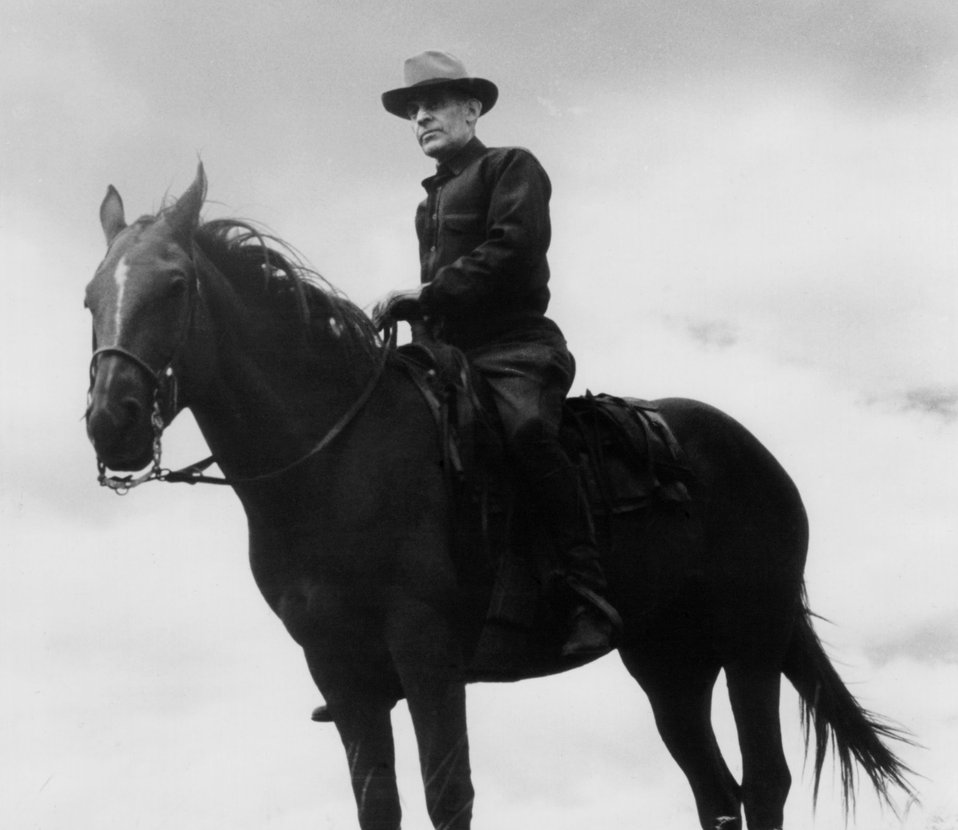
elers10

Elers Koch was a U.S. Forest Service Forest Ranger. He often patrolled the Lolo National Forest in Montana while armed with a weapon.